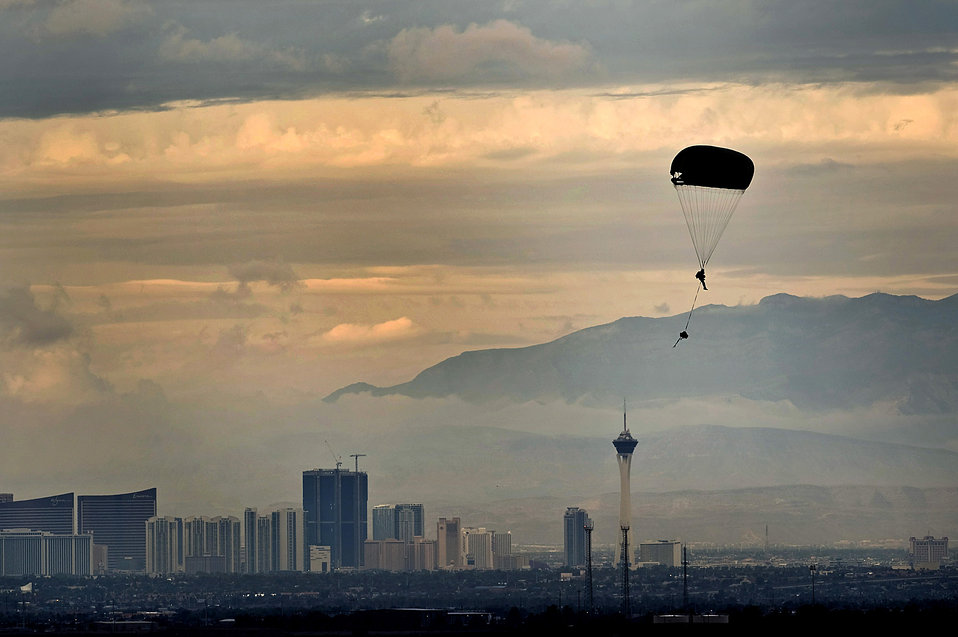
In the zone

An Airman from the 820th RED HORSE airborne flight parachutes into a drop zone from a C-130 Hercules during a training mission Oct. 4, 2011, at Nellis Air Force Base, Nev. RED HORSE Airmen perform airdrop missions to stay current on training and certifications, enabling them to perform jump missions and operate their own drop zones.